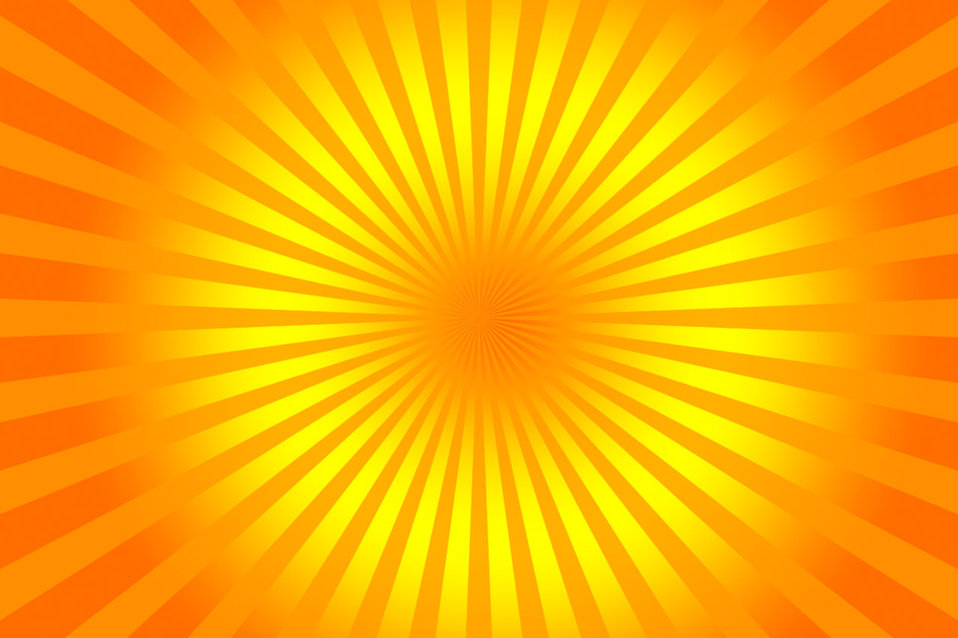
Yellow rays 2

Yellow rays background.